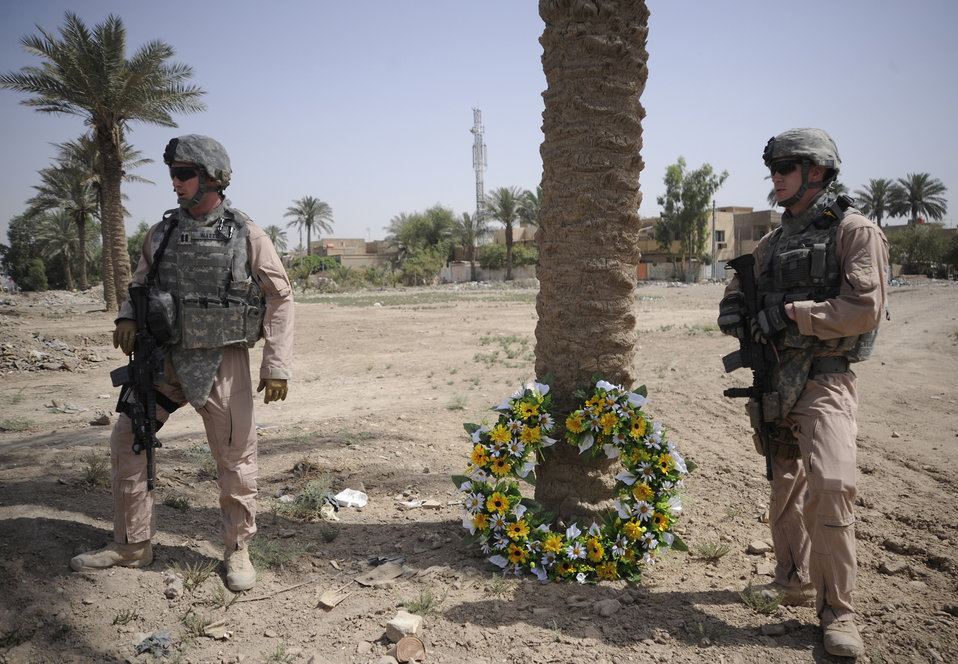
Airmen honor fallen comrade in arms

Capt. David Watts and Senior Airman Cole Magin stand beside a wreath placed as a memorial for Staff Sgt. John T. Self who was killed in action two years ago on this date when an improvised explosive device struck his vehicle May 14 in Iraq. Captain Watts and Airman Magin served with Sergeant Self and currently are deployed in support of Operation Iraqi Freedom.